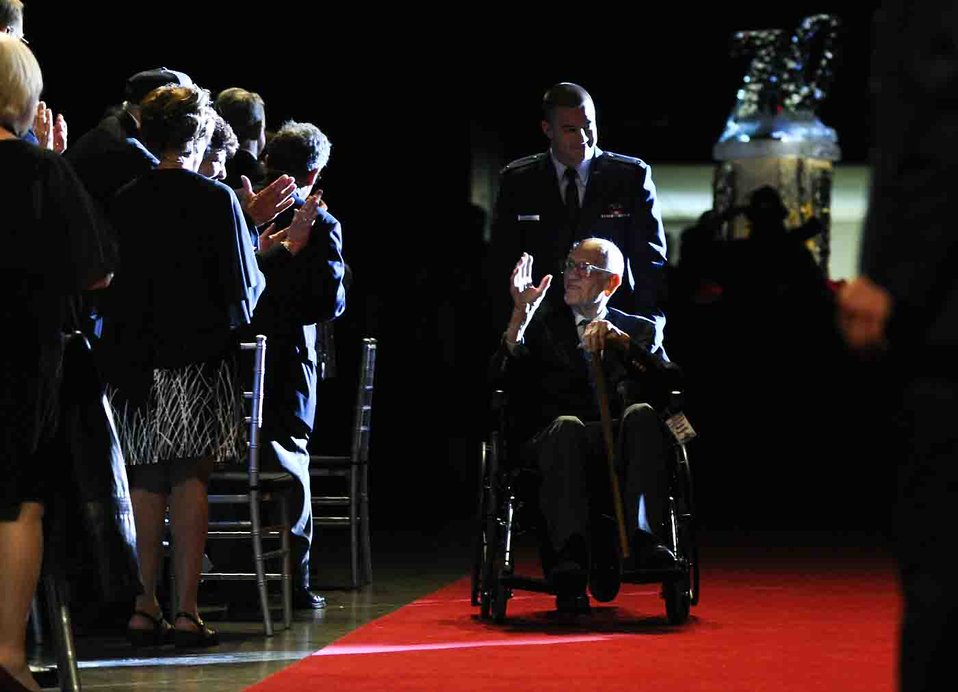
Doolittle Raid 70th anniversary

Surviving Doolittle Raider Major Thomas C. Griffin, navigator of the #9 plane, greets attendees of a banquet to honor the Raiders during their 70th reunion at the National Museum of the U.S. Air Force, April 19, 2012.